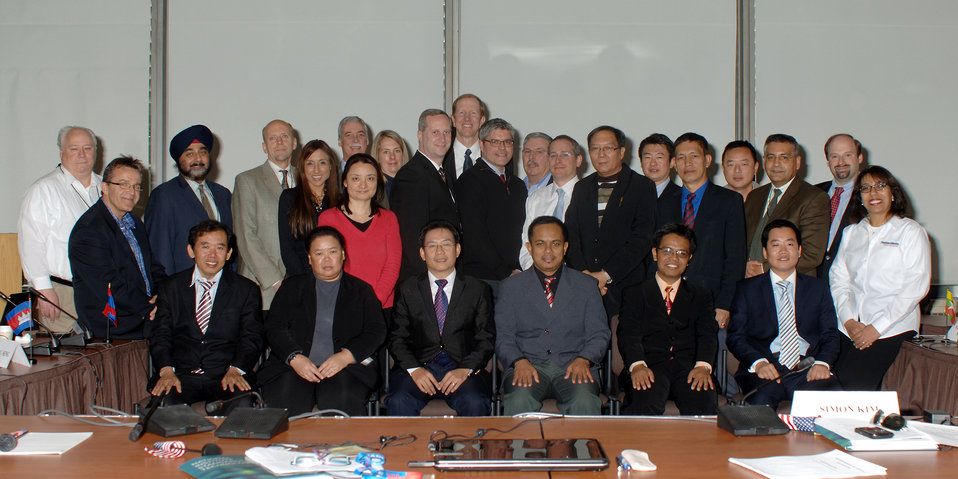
Association of Southeast Asian Nations

Delegates representing Cambodia, Indonesia, Laos, Malaysia, Myanmar, the Philippines, Thailand and Vietnam, member of the Association of Southeast Asian Nations, came to NIST for training on U.S. standards and conformity assessment principles and practices.